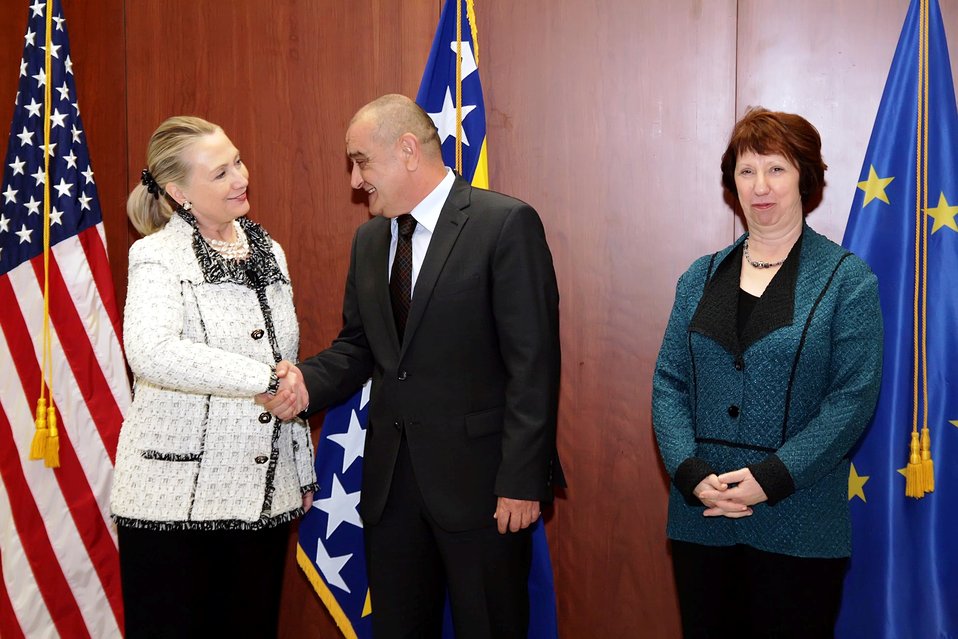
Secretary Clinton Shakes Hands With Chairman of the Council of Ministers Bevanda

U.S. Secretary of State Hillary Rodham Clinton shakes hands with Chairman of the Council of Ministers Vjekoslav Bevanda at the Presidency Building in Sarajevo, Bosnia and Herzegovina, October 30, 2012. Also pictured is EU High Representative Catherine Ashton, right.